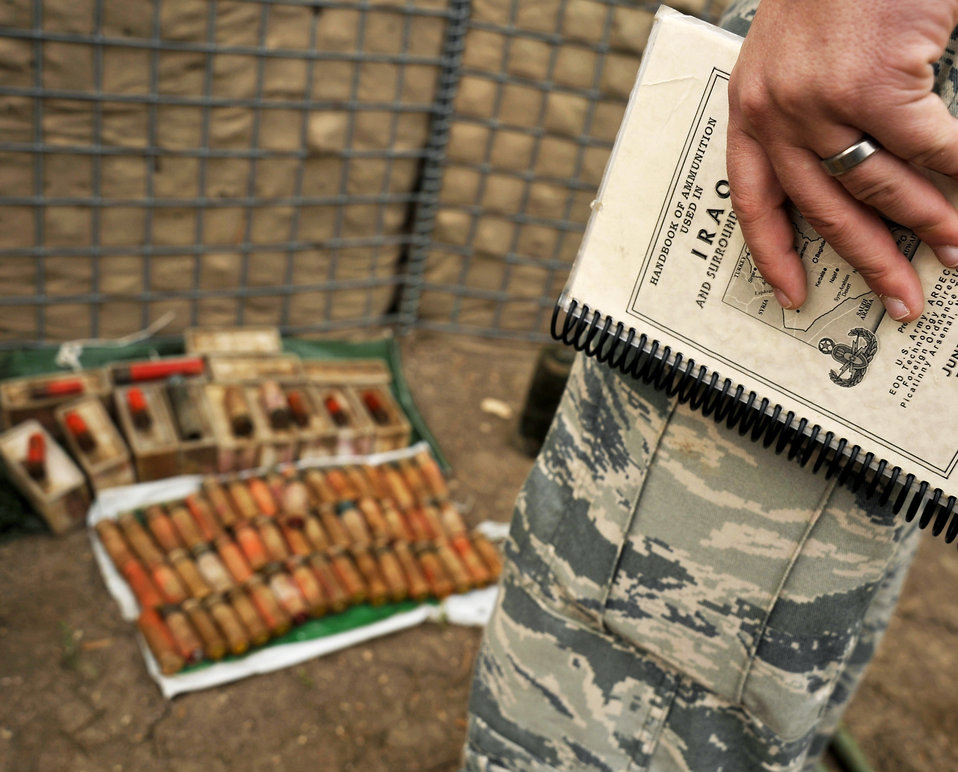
Staff Sgts. Cody Flood and Michael Jamison collect data on explosives

Staff Sgt. Cody Flood collects data on the number of explosives to prepare for a controlled detonation, Nov. 23, 2009, at Mahmudiyah, Iraq. Sergeant Flood is a 447th Expeditionary Civil Engineer Squadron explosive ordnance disposal technician.